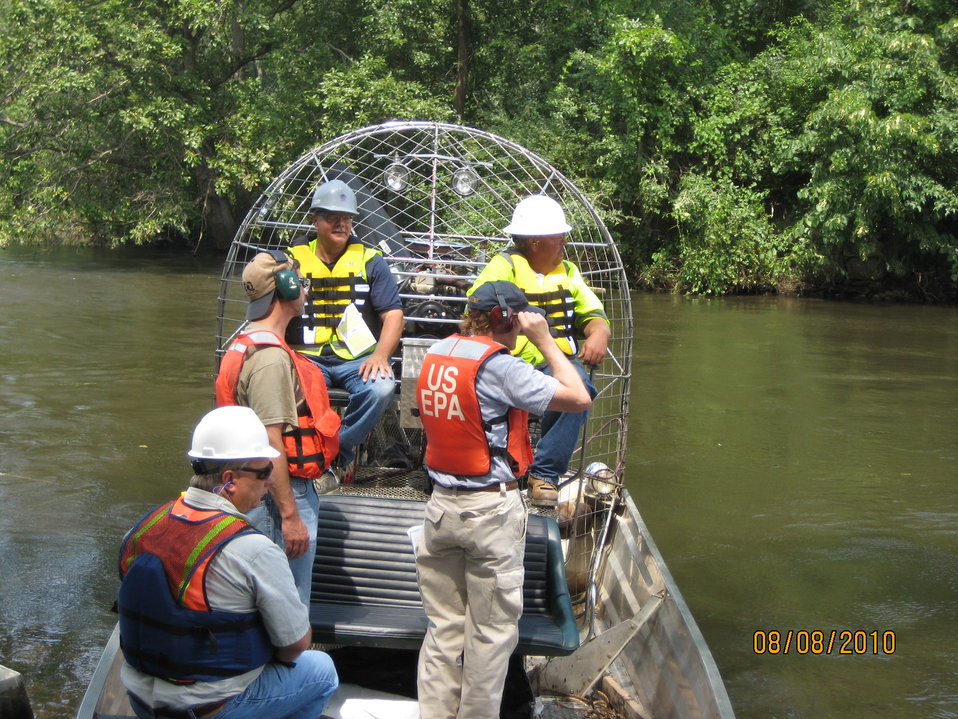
Boat Ops in Division C-0

August 8, 2010 - EPA On-Scene Coordinators conducting reconnaissance of Kalamazoo River cleanup operations that affected more than 30 miles of the river.